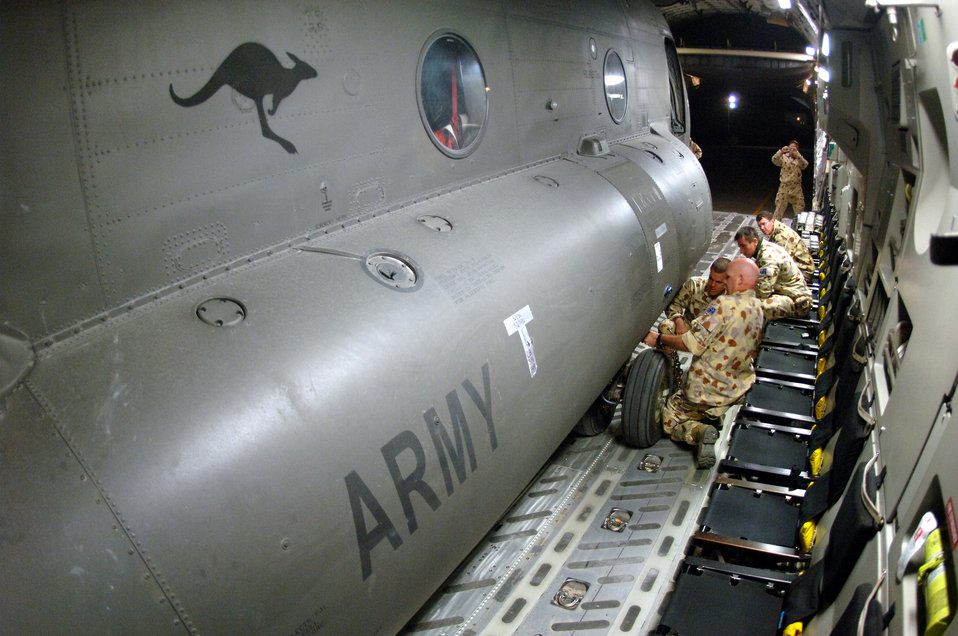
C-17 cargo load

Crewmembers from the 817th Expeditionary Airlift Squadron and their Australian forces counterparts secure an Australian Army CH-47 helicopter onto a C-17 Globemaster III at a deployed location in Southwest Asia on Sunday, Mar 12, 2006. The C-17 is from McChord Air Force Base, Wash.